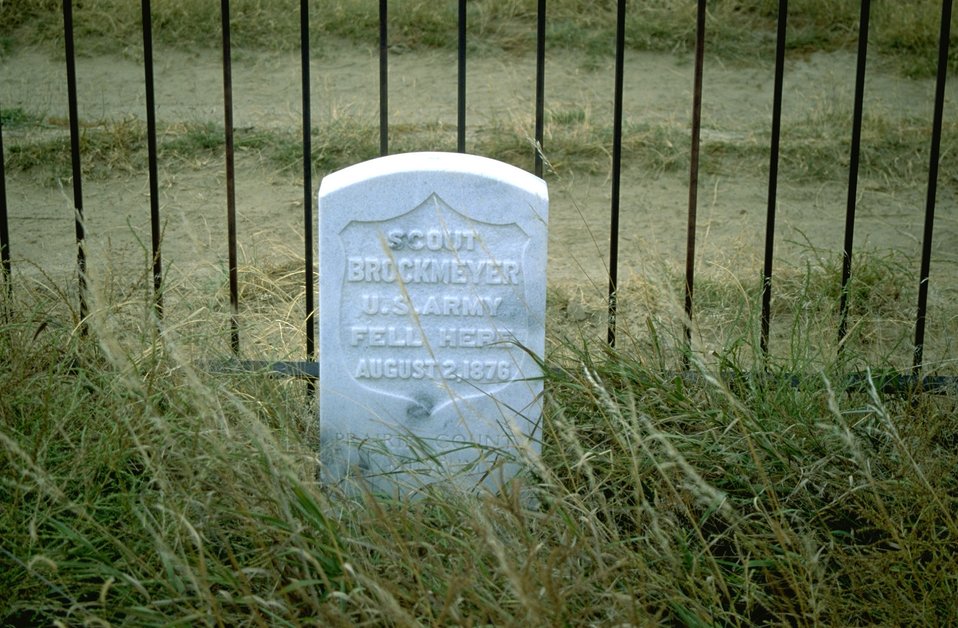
Headstone of Scout Brockmeyer